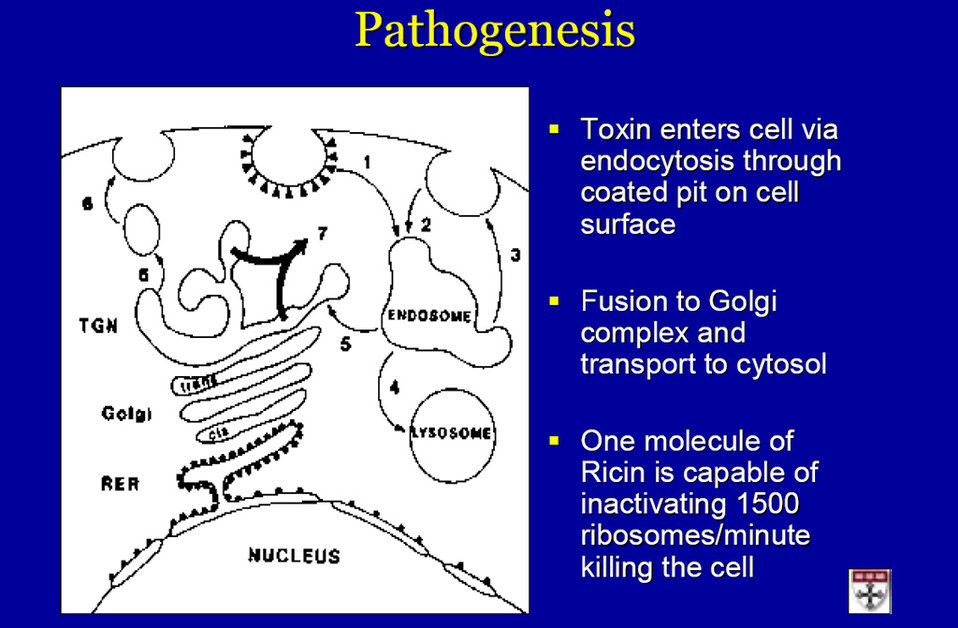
This presentation highlights the history, chemistry, and uses of ricin, a highly toxic poison made from castor beans.